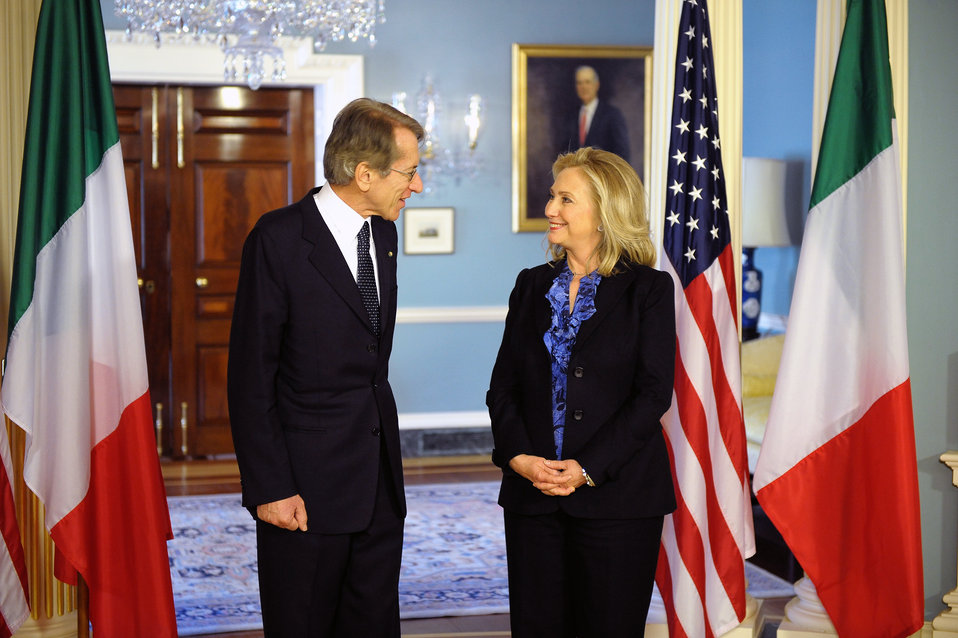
Secretary Clinton Meets With Italian Foreign Minister Terzi

U.S. Secretary of State Hillary Rodham Clinton meets with Italian Foreign Minister Giulio Terzi di Sant’Agata at the U.S. Department of State in Washington, D.C., on February 9, 2012.